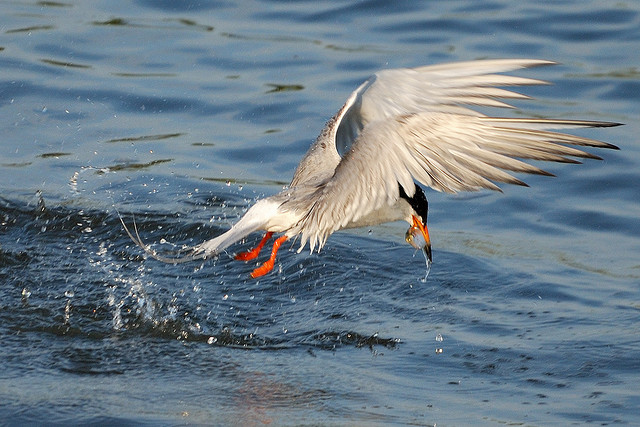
Forster's tern

Edwin B. Forsythe National Wiildlife Refuge, NJ
Photo: hjhipster, Creative Commons